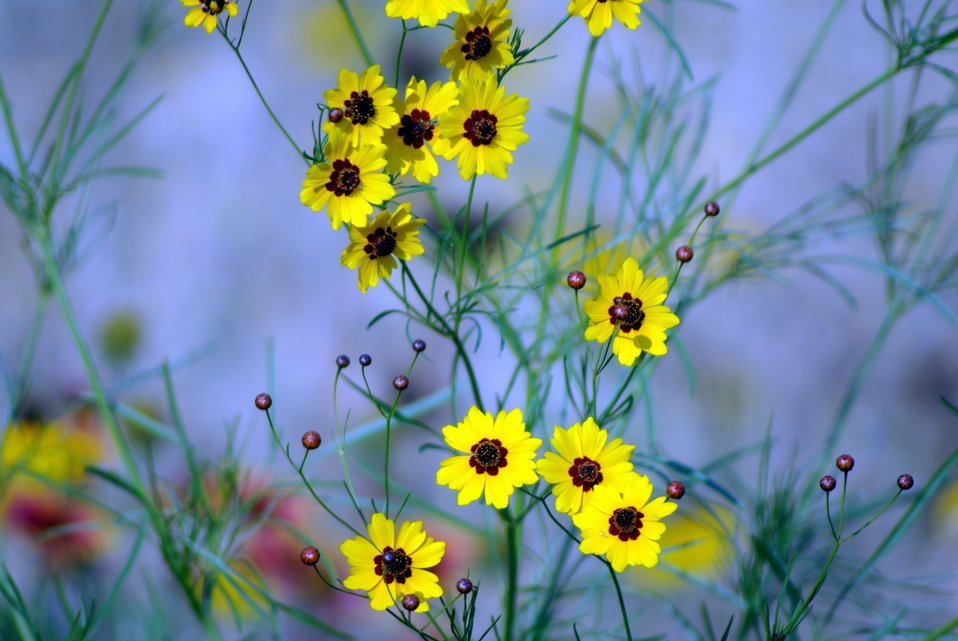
Coreopsis close-up

Wildflowers at Wichita MountainsWildlife Refuge in Oklahoma.